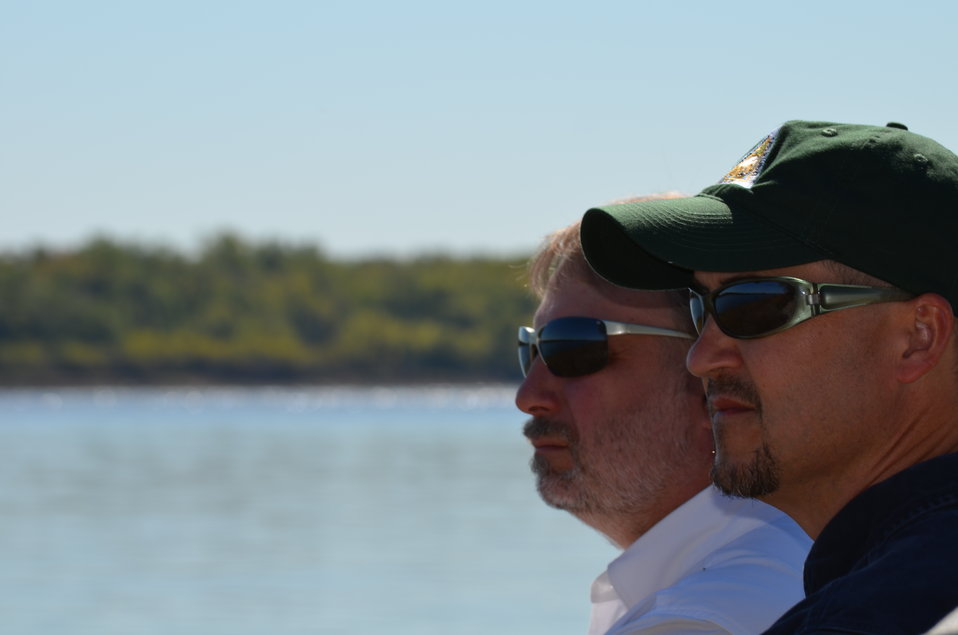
Partners take in the view

Viewing confluence. USFWS/Ashley Spratt